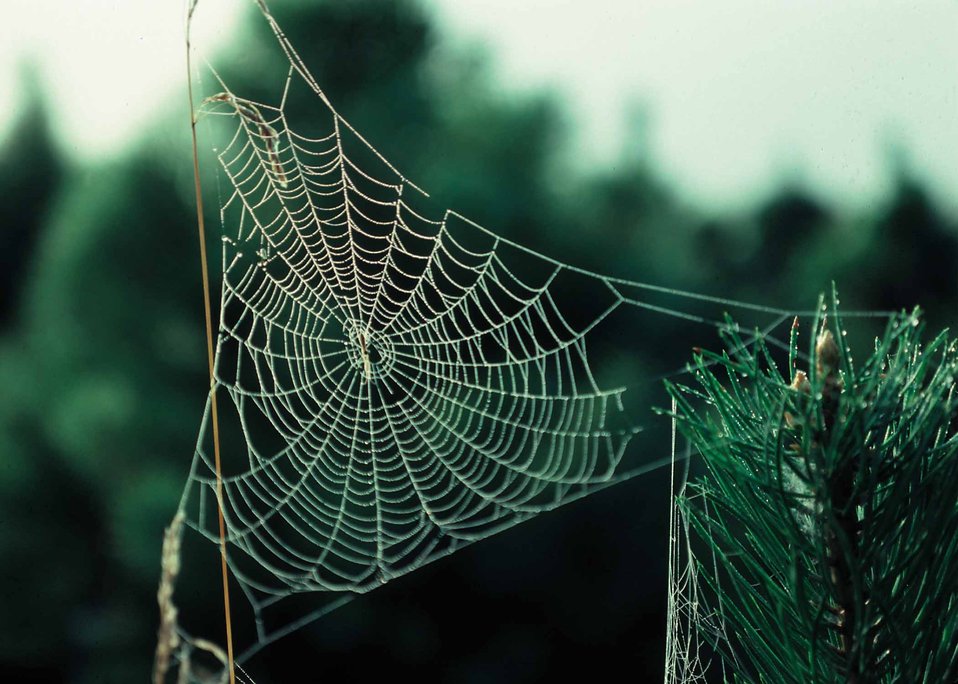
A spider web.